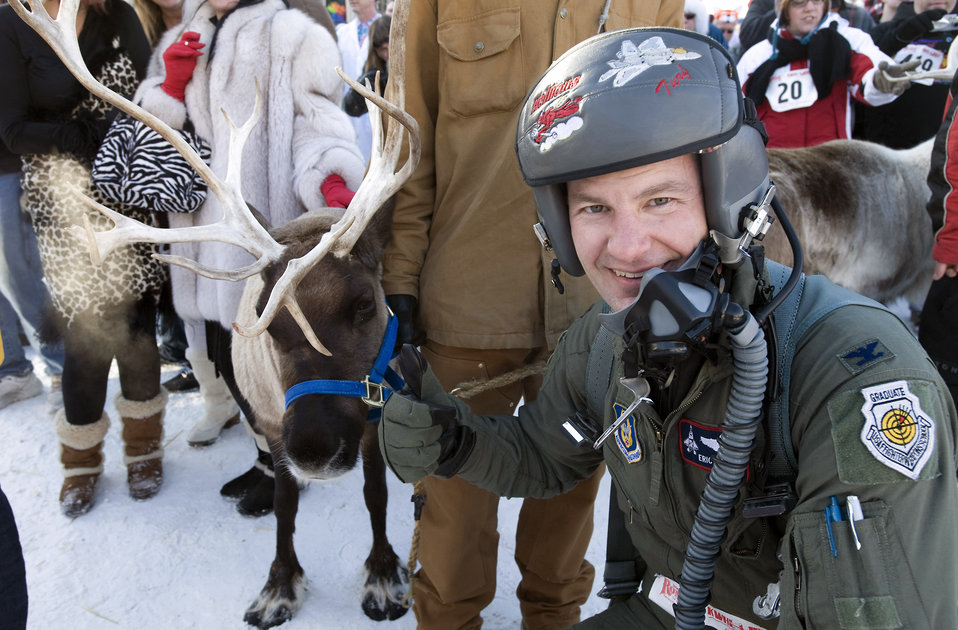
Santa's other reindeer

Colonel Eric Overturf prepares for the 2nd Annual Running of the Reindeer down the streets of Anchorage March 1 in Alaska. Colonel Overturf, an F-22 Raptor pilot, ran in the celebrity heat running two city blocks with a herd of reindeer darting through the crowd. Colonel Overturf is the 477th Fighter Group commander at Elmendorf Air Force Base, Alaska.